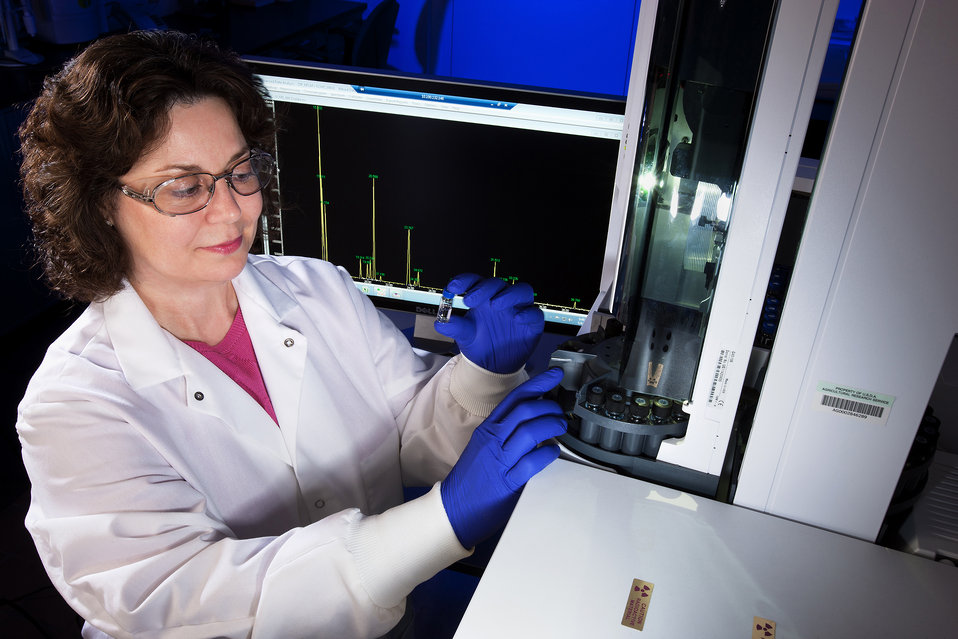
U.S. Department of Agriculture (USDA) Agricultural Research Service (ARS) technician Renee Russell uses a gas chromatograph to analyze the pesticide content of water samples collected at various points along a vegetated drainage ditch at the ARS National Sedimentation Laboratory in Oxford, MS on Sept. 19, 2003. The goal of this project is to determine how the ditches affect the fate and distribution of pesticides.